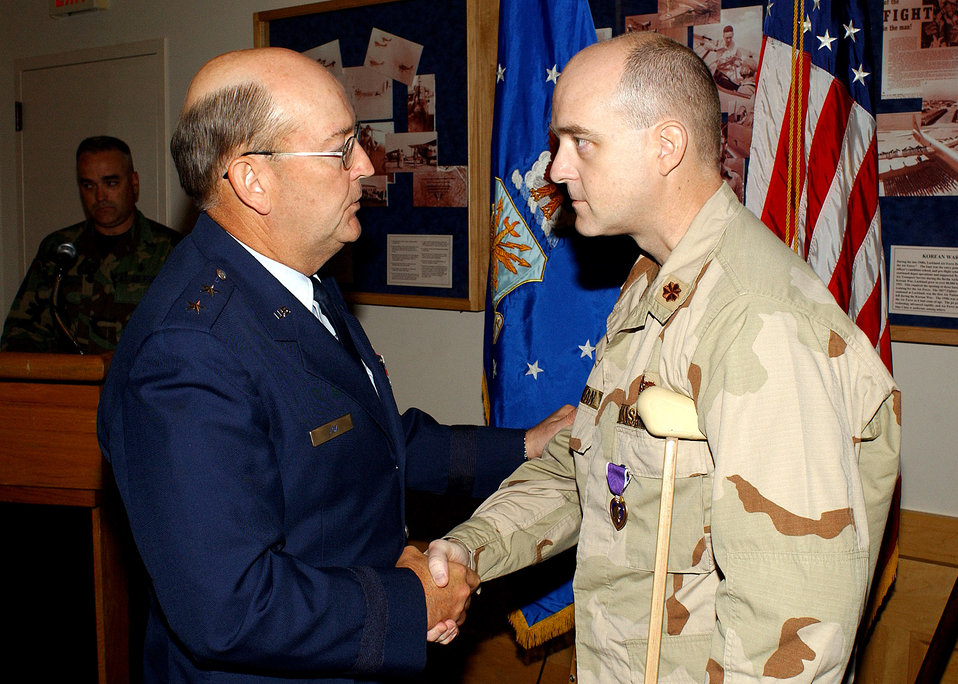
An Airman's road to wellness

Maj. Gen. Dean Fox, then the Air Force's top civil engineer, presents the Purple Heart to Maj. Matthew Conlan on August 12, 2005, at Wilford Hall Medical Center, Lackland Air Force Base, Texas. The major was awarded the Purple Heart medal for wounds from a blast injury received while serving in Afghanistan.